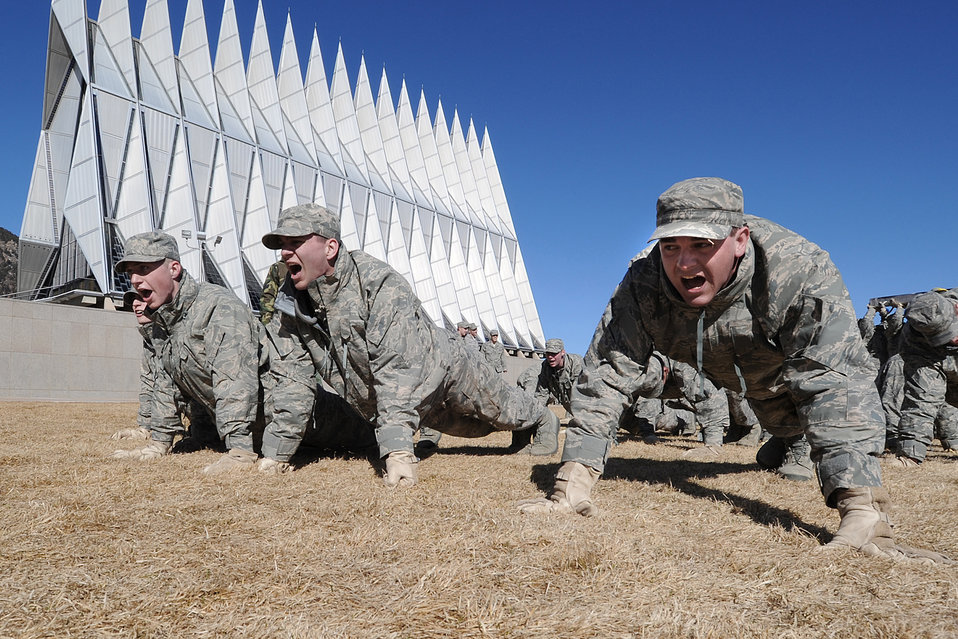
Recognition Days

Cadet freshmen Matthew Schuetz, Caleb Belden, and William Hicks of Cadet Squadron 18 recite information about the F-15 Eagle while performing push-ups during Recognition at the U.S. Air Force Academy, Colo., March 12, 2010. Recognition is the final event before the freshmen cadets are welcomed into the ranks of the upper class cadets.